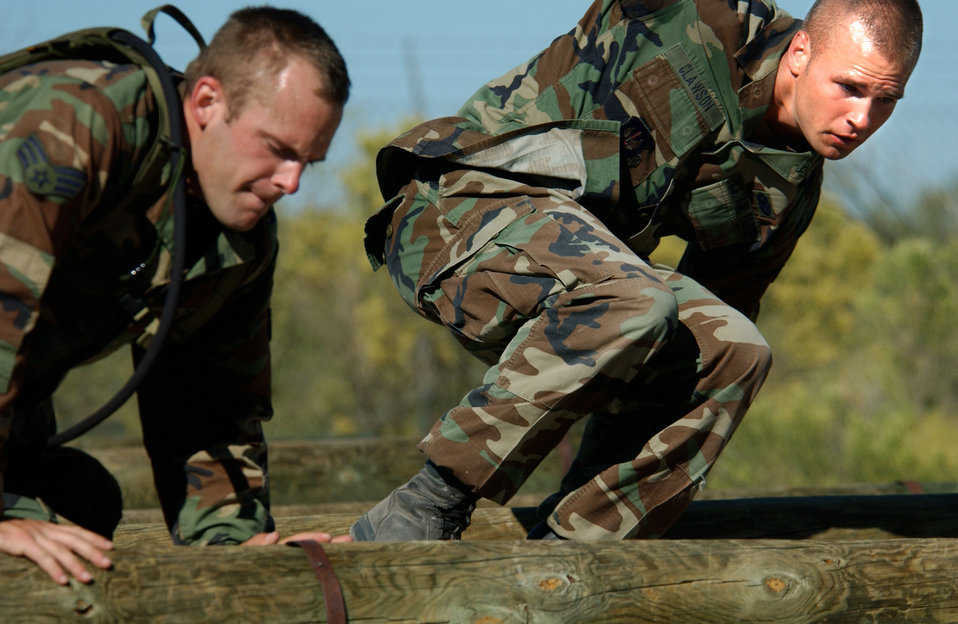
Defender Challenge 2004

FORT HUACHUCA, Ariz. -- Senior Airman Chris Clawson leaps over beams on the training obstacle named